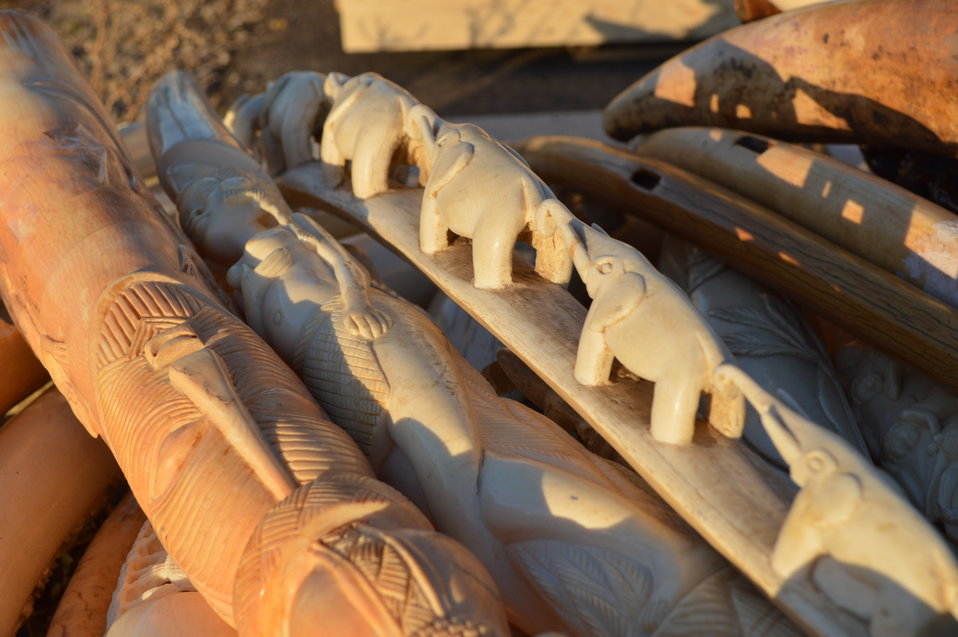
Ivory in Morning Light 2